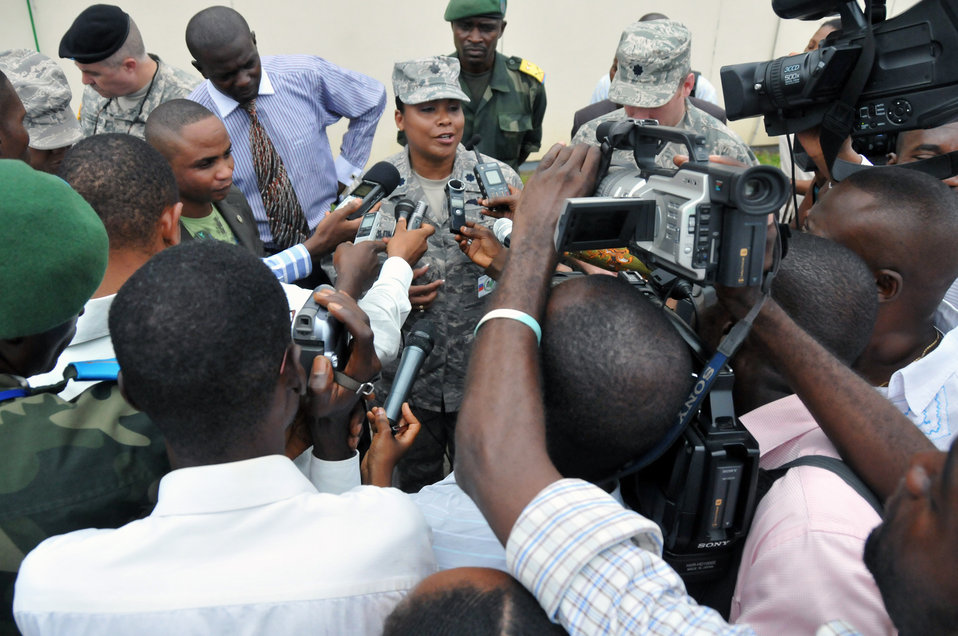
MEDLITE 11

Lt. Col. June Oldman speaks with members of the local media after the opening ceremony April 25, 2011, in Kinshasa, Democratic Republic of the Congo. MEDLITE 11 is a joint medical exercise focused on aeromedical evacuation, to improve the readiness of U.S. Air Force and DRC personnel.Colonle Oldman is the mission director for MEDLITE 11.